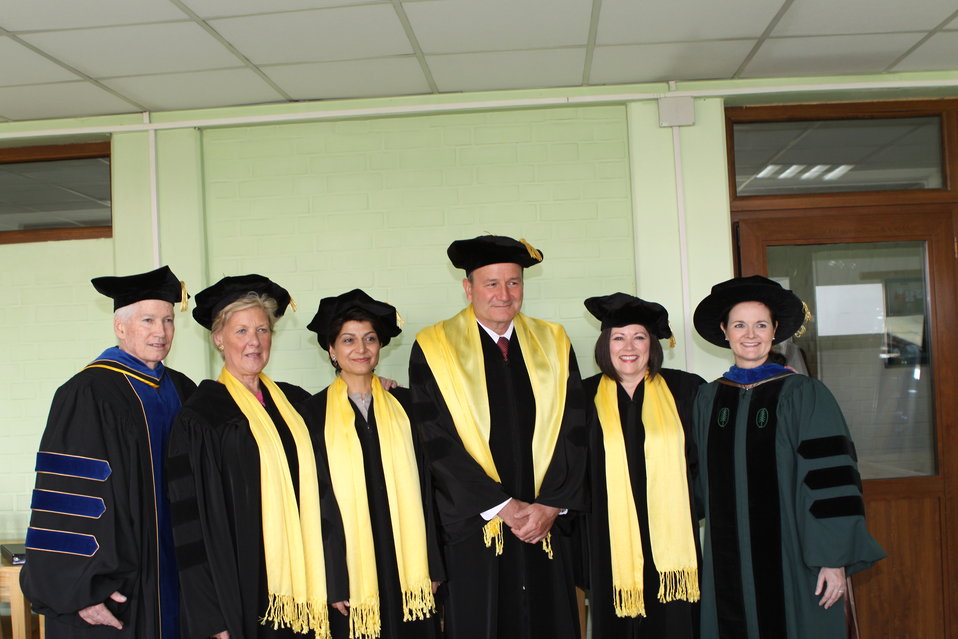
100526 AUAF Graduation 061